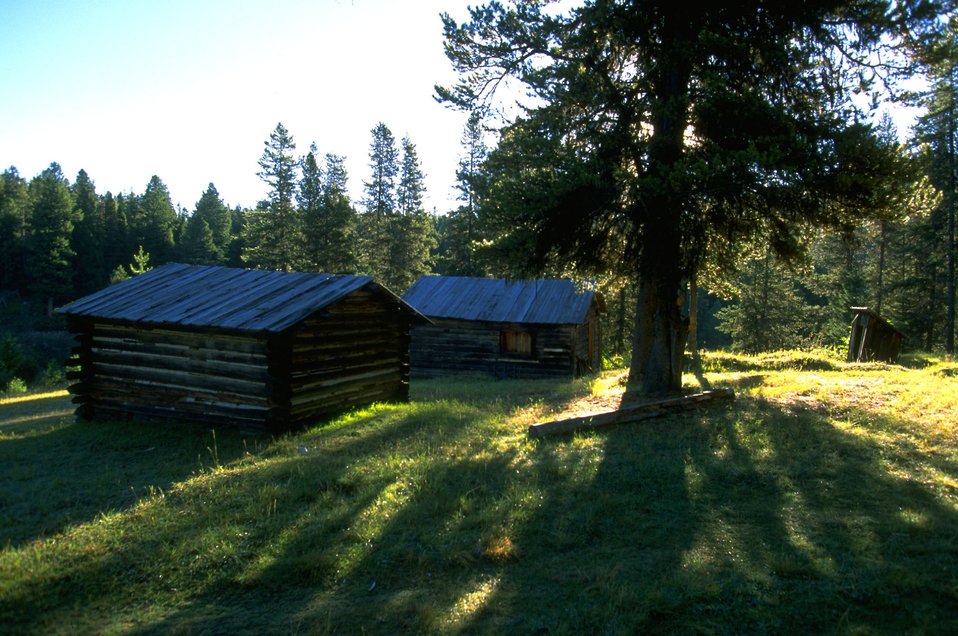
Garnet Ghost Town